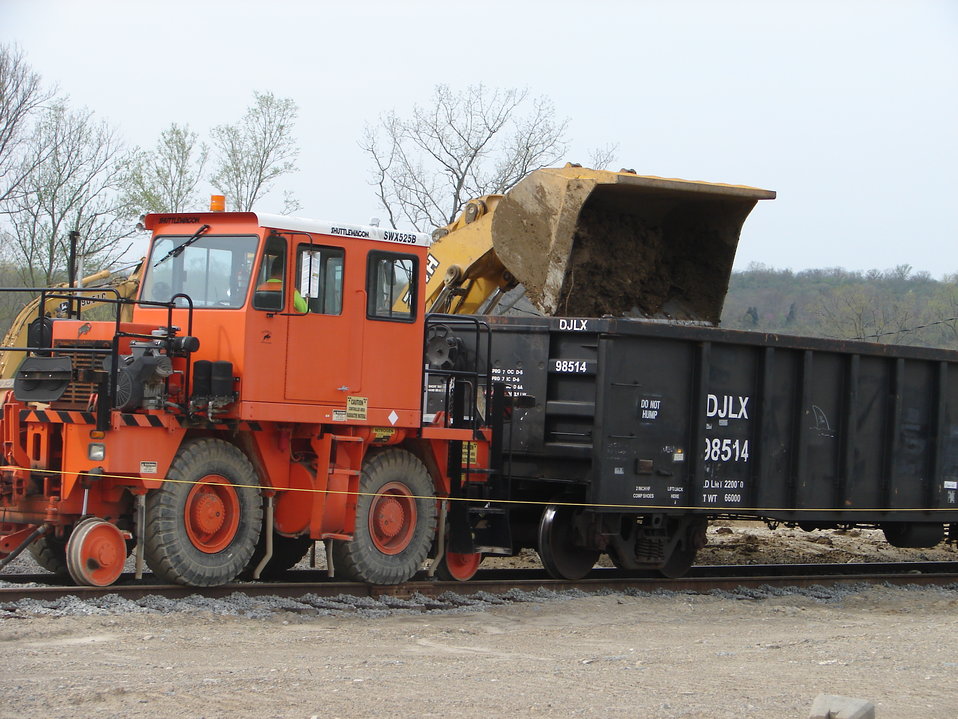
Recovery Act Project Brings End to Mound Site Cleanup Activities

The Recovery Act invested $17.9 million in the completion of EM’s legacy cleanup activities at the Mound Site in 2010.
Recovery Act workers disposed nearly 20,000 cubic meters of soil and demolition debris in the cleanup, which focused on the Operable Unit-1, a former mixed-waste landfill at the 306-acre site. The Recovery Act cleanup was the final remediation project at Mound.
The federal government is in the process of transferring ownership of the site to the Mound Development Corporation, a community reuse organization.